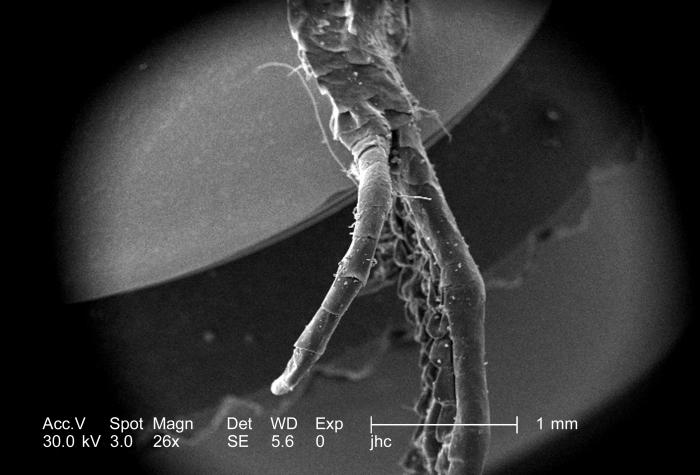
Photographed here under a low magnification of 26x, this scanning electron micrograph (SEM) depicted some of the external morphologic features of a deceased lizard's foot found desiccated on the suburban grounds of Decatur, Georgia. Note the armor-like appearance of the horny scaled exterior. The clawed morphology displayed by the reptile's foot closely reflects that displayed by birds as well.